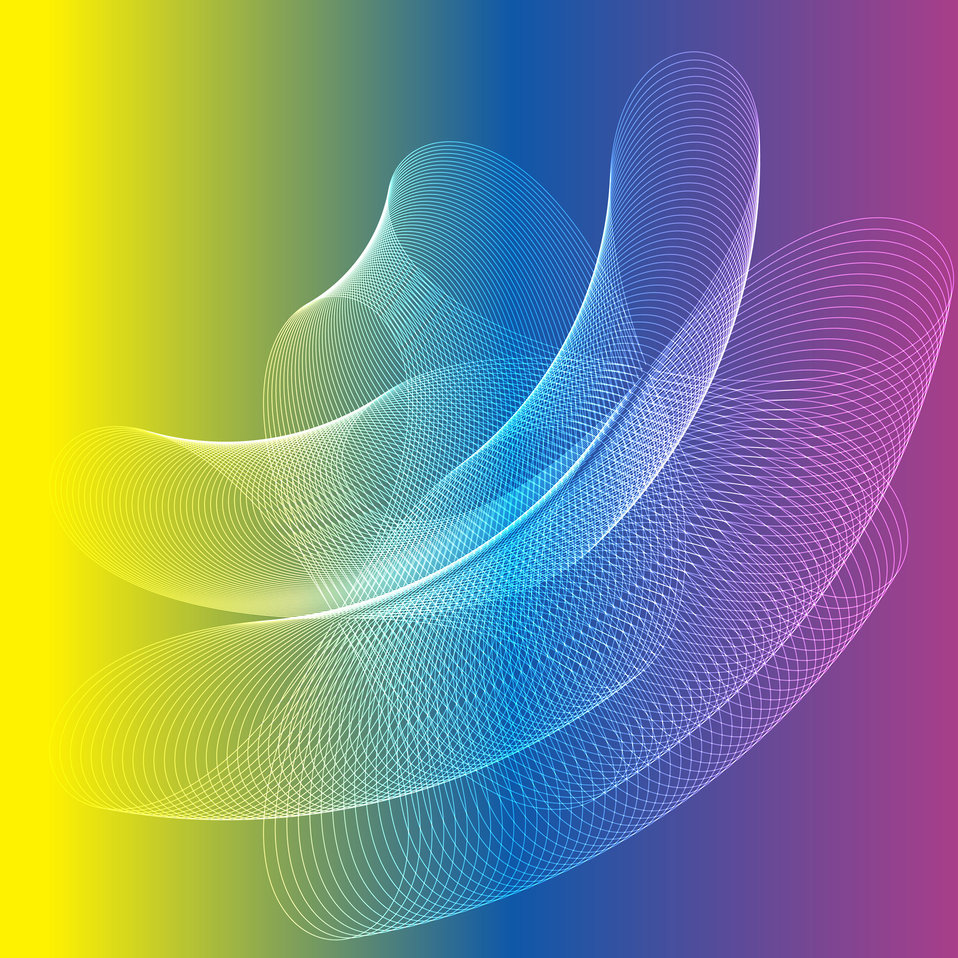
Guilloche spiral pattern

Colorful guilloche spiral pattern background.